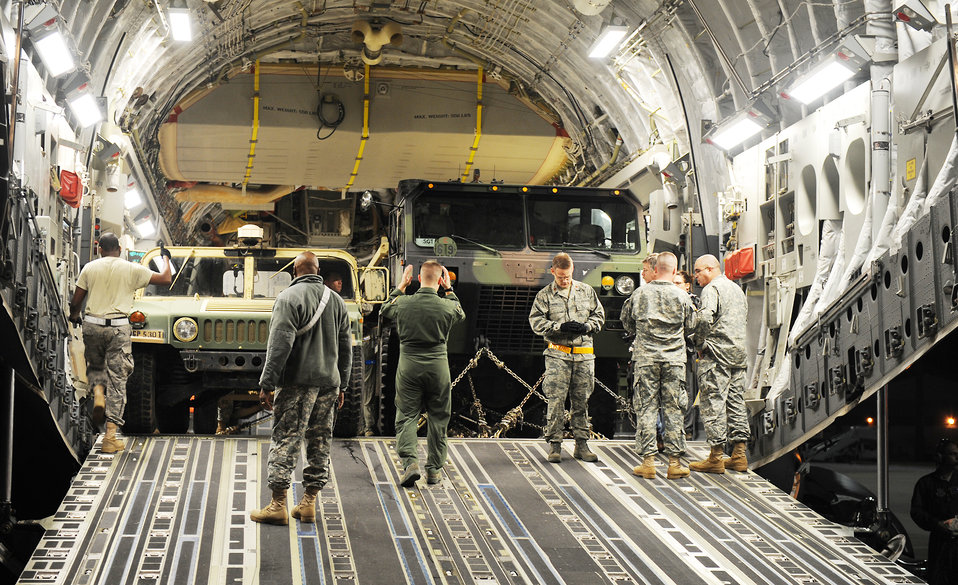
United Response

Air Force and Army personnel load a Humvee from the 49th Quartermaster Group, Mortuary Affairs at Fort Lee, N.J., into a C-17 Globemaster III from 512th Airlift Wing, Dover Air Force Base, Del., Jan. 19, 2010 at Langley Air Force Base, Va. Personnel from Langley AFB and Fort Eustis worked together to load the C-17 as part Operation Unified Response.